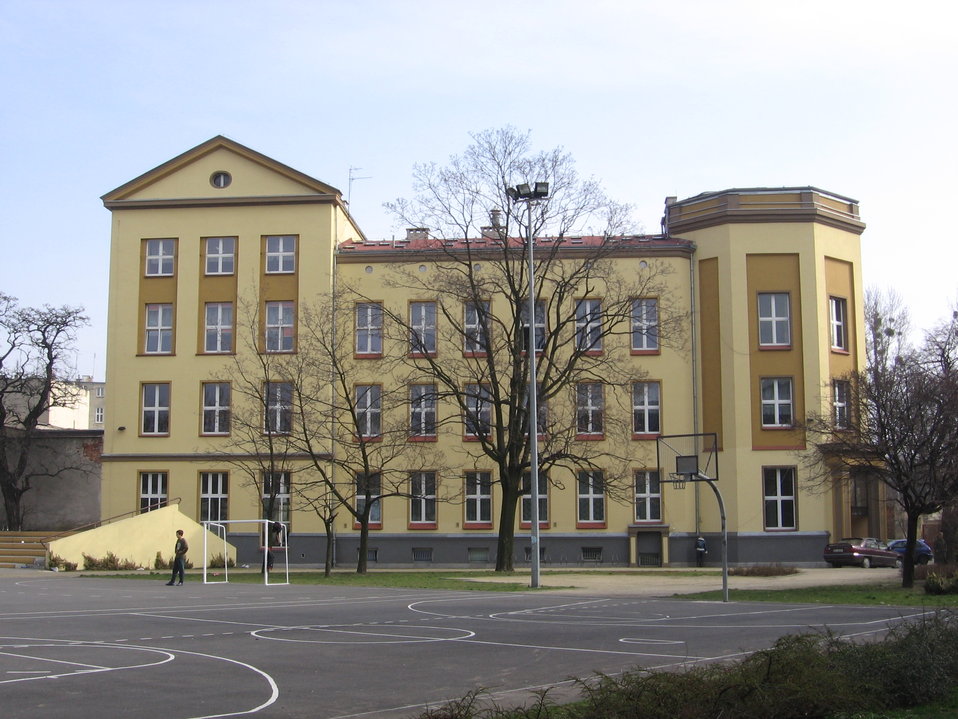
C. J. Ch. Zimmermann, Catholic and Protestant secondary school in Wroclaw, 1865, later altered. West façade.